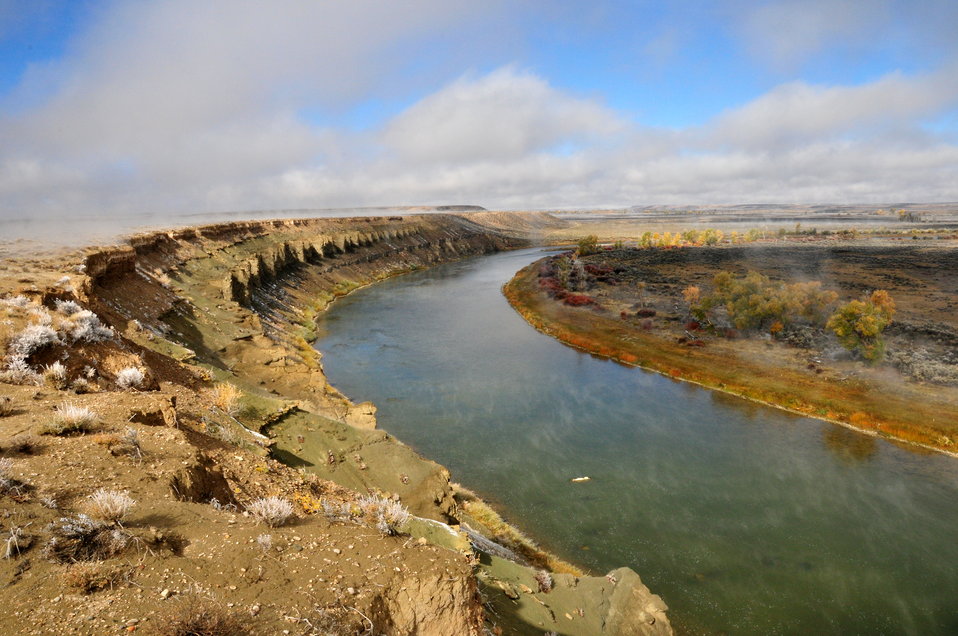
View of Horseshoe Bend on Seedskadee NWR